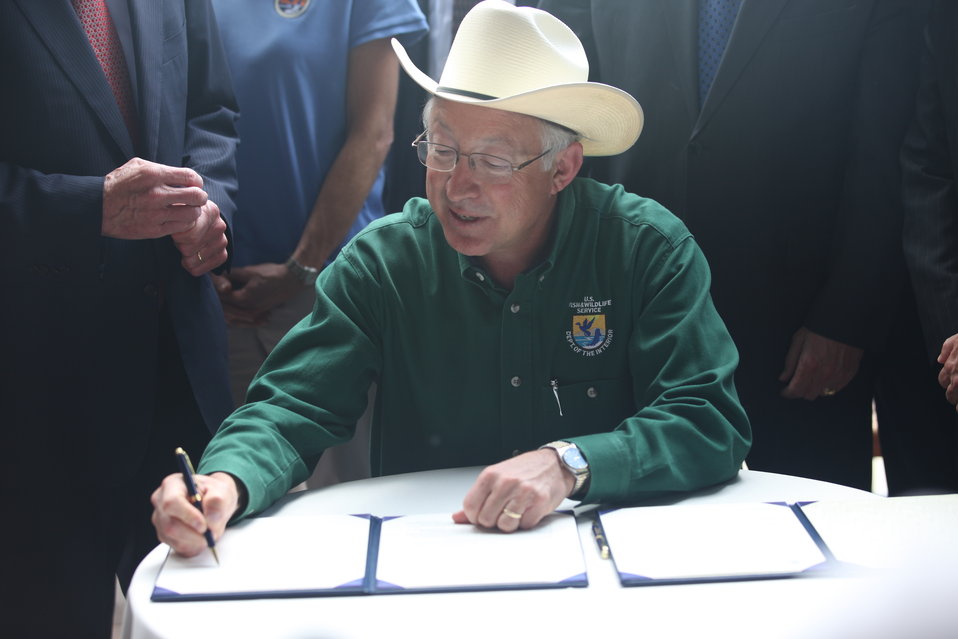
Salazar Signs Document

Secretary of the Interior Ken Salazar signs National Blueway designation for the Connecticut River. The U.S. Fish & Wildlife Service Silvio O. Conte National Fish & Wildlife Refuge spans the length of the river (410 miles).
The Connecticut River is the first in the nation to be designated a Blueway.